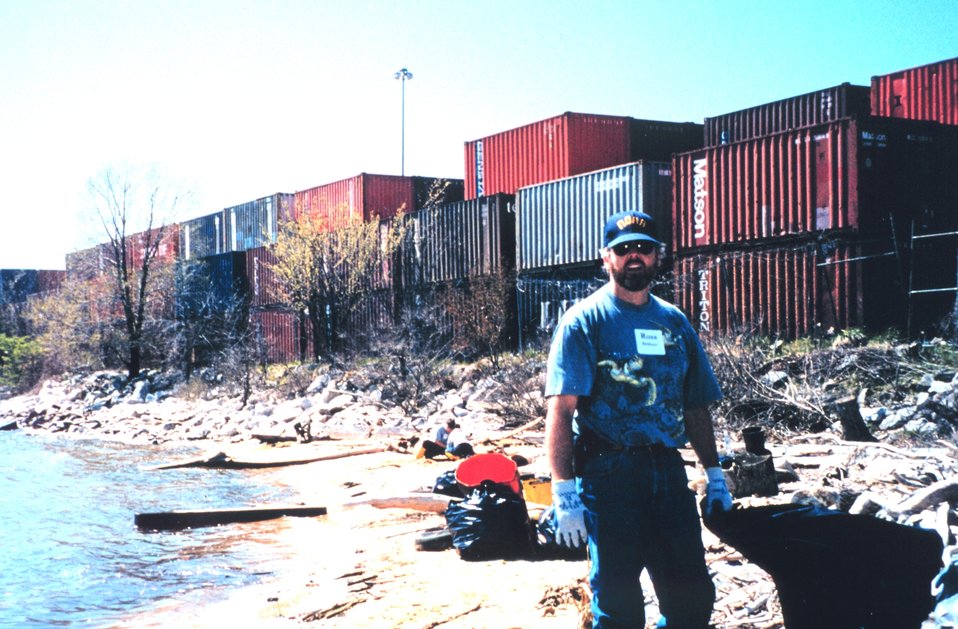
Volunteers helping clean up the wetlands and waterfront area around Fort McHenry in Baltimore Harbor. Local NOAA personnel turned out in force for this event including Dr. Russ Bellmer of the NOAA NMFS Office of Habitat Conservation.